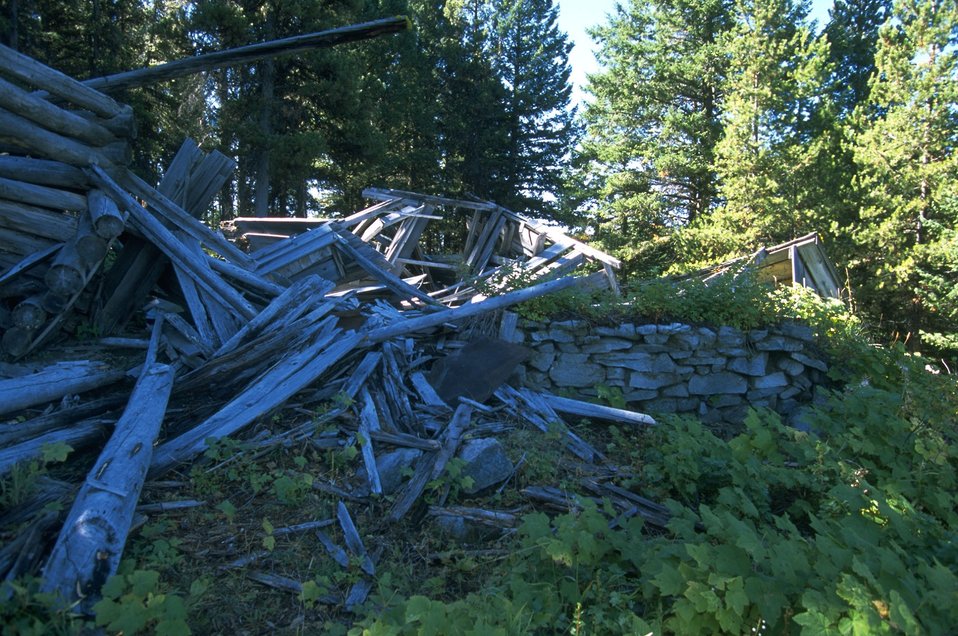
Old cabin in Coloma